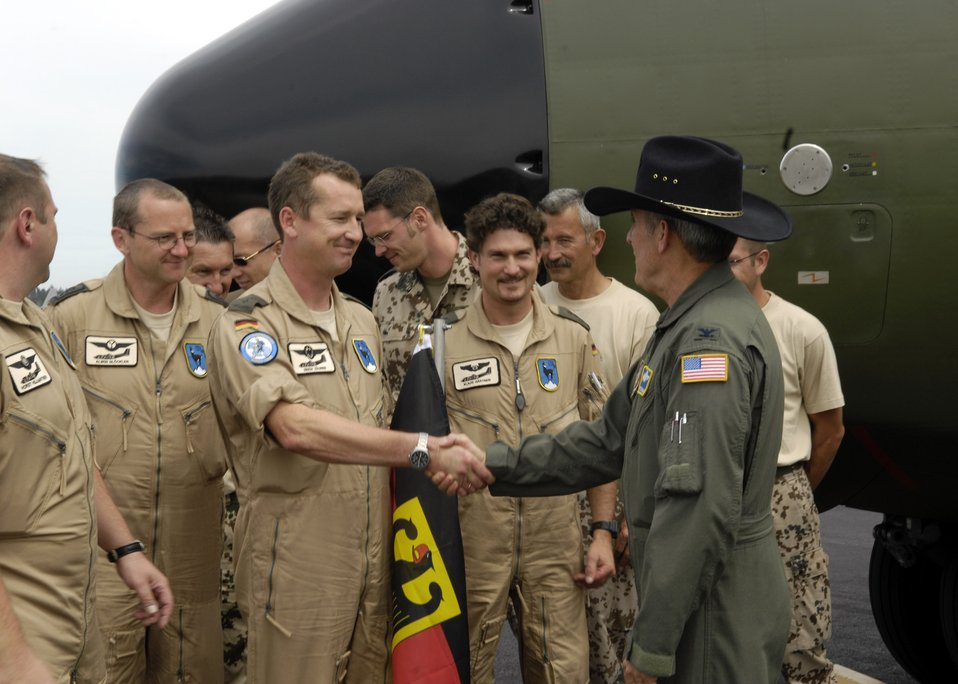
Rodeo 2007

Col. Bill Bradley greets the German Air Force team July 16 at McChord Air Force Base, Wash. Rodeo 2007, hosted by Air Mobility Command, is a readiness competition for U.S. and international mobility forces. It focuses on improving war fighting capabilities and support of the Global War on Terrorism. Colonel Bradley is a Rodeo 2007 official.